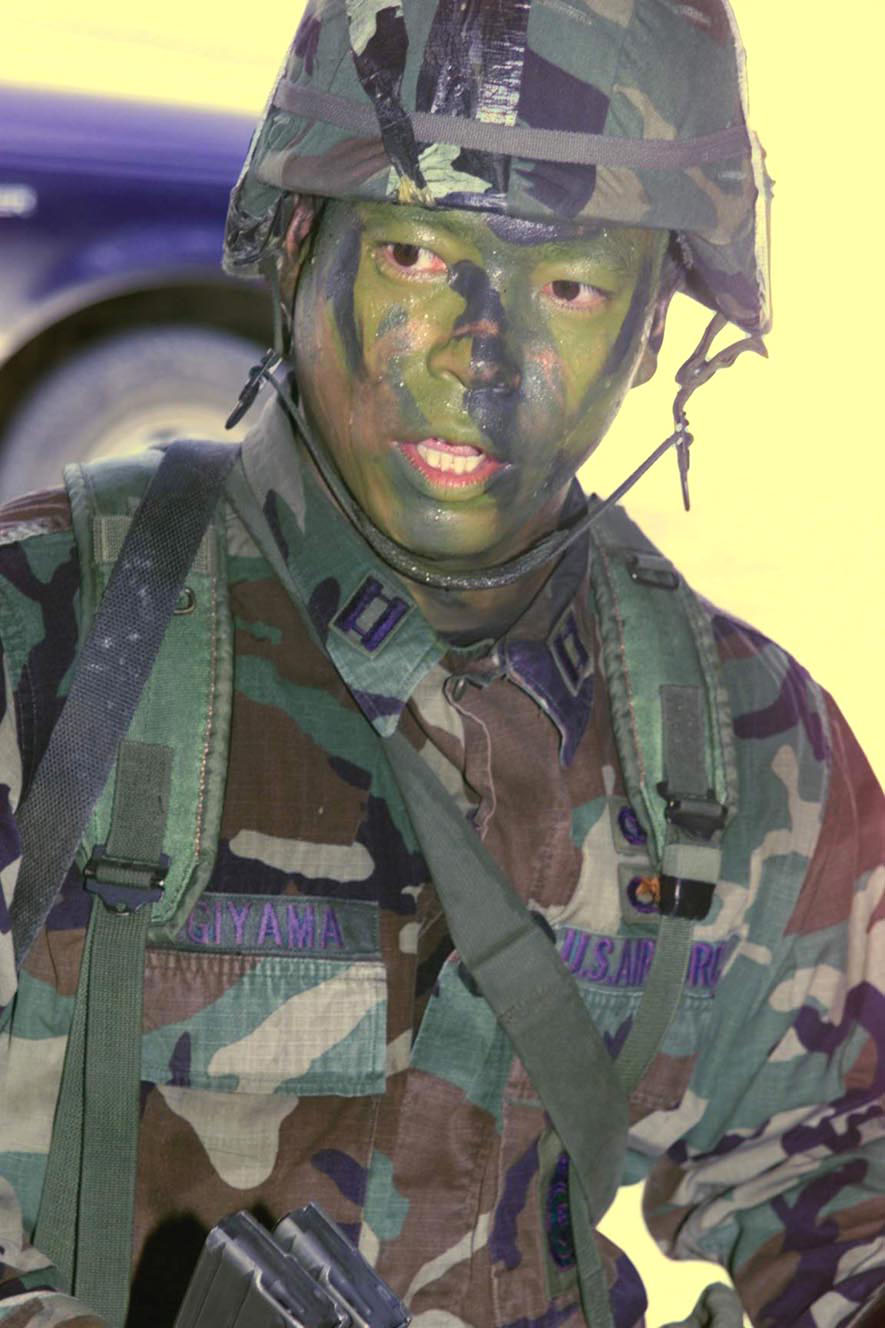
No ammo, right?

CAMP BULLIS, Texas -- After completing the combat rifle portion of Defender Challenge 2000, Capt. Steve Sugiyama, from the 11th Wing at Bolling Air Force Base, D.C., ensures that all rounds issued had been fired at the ammunition declaration tent here, Oct. 31. Defender Challenge is the annual Air Force-wide competition showcasing the talents and capabilities of 13 international security forces teams in seven physical fitness, base defense and policing skills. The competition ends Nov. 4.